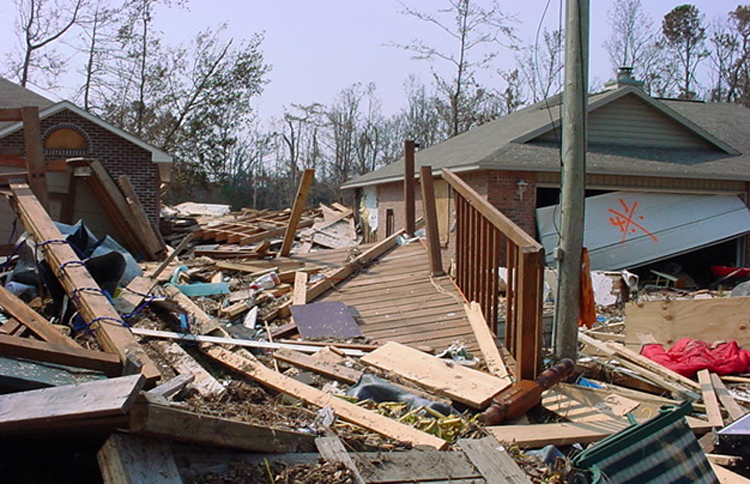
Airman attempts to rebuild life after Hurricane Katrina

Layers of debris lie in front of 1st Lt. Dawn Cliftons' and a neighbor's homes after Hurricane Katrina blew through the southern Mississippi coast. The Cliftons' home suffered extensive damage and was ordered to be demolished by county officials in December 2005.